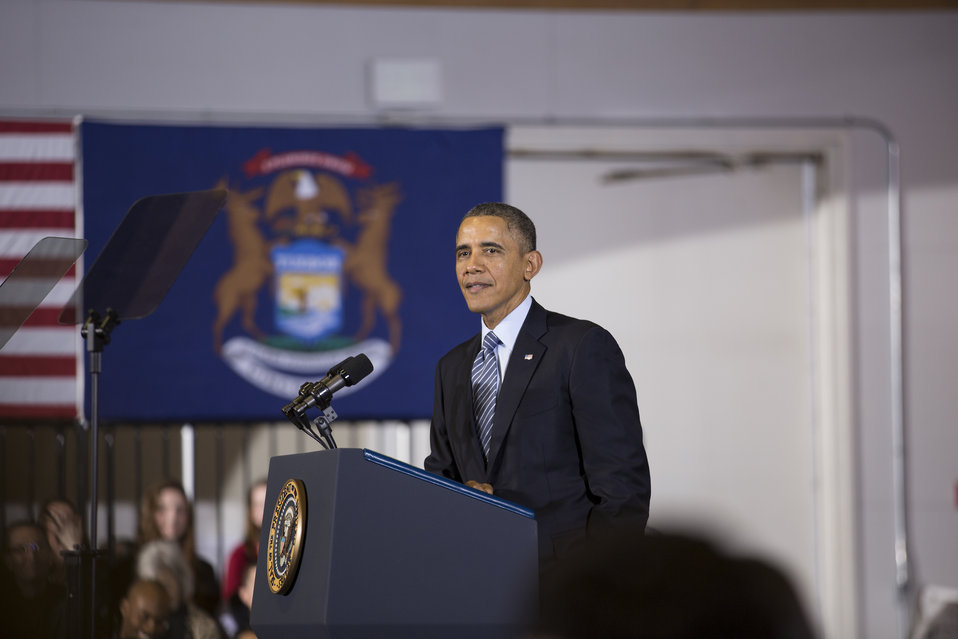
President Barack Obama speaks on the importance of the Agricultural Act of 2014 to America’s economy at Michigan State University in East Lansing, MI on Friday, Feb. 7, 2014. The President spoke about the progress over the last five years and how this bill will build on that progress.